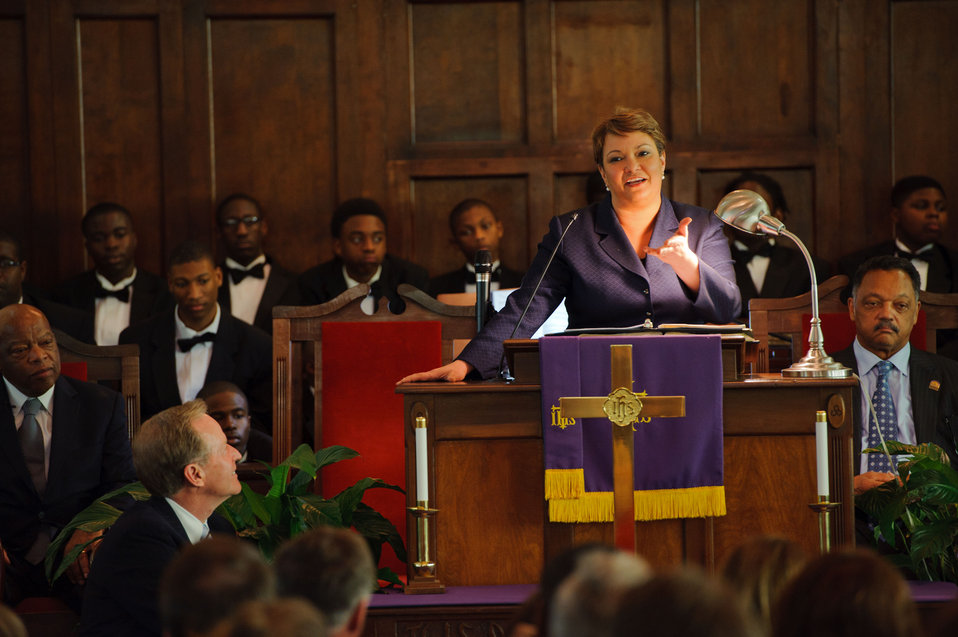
March 4, 2012 Administrator Jackson speaks to congregation at historic Brown Chapel AME Church

On Sunday, March 4, EPA Administrator and Obama cabinet member, Lisa P. Jackson spoke to attendees at the Brown Chapel in Selma, AL as a part of Faith & Politics’ 12th Congressional Civil Rights Pilgrimage events.
Her remarks